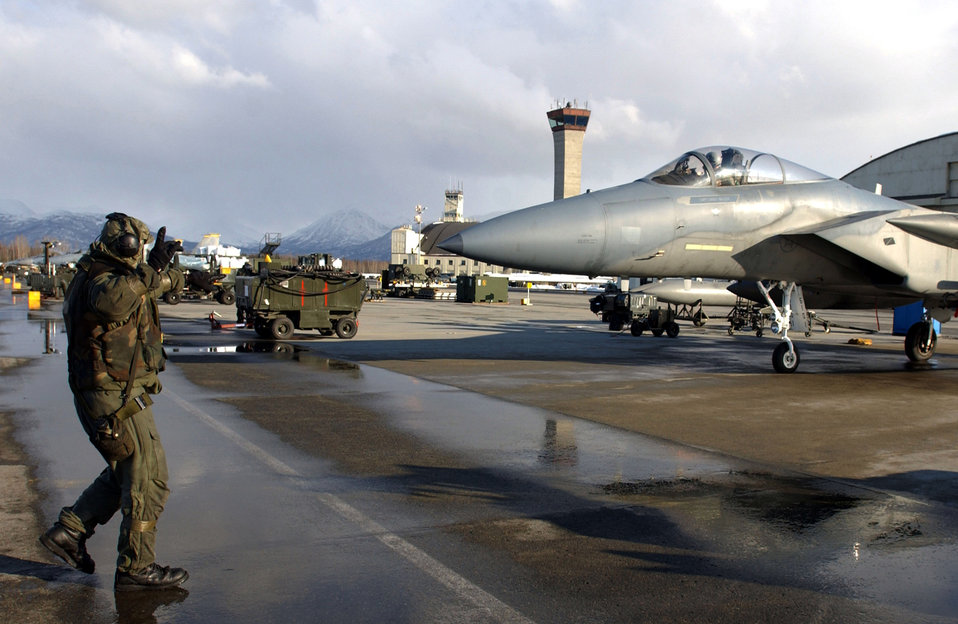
Polar marshal

ELMENDORF AIR FORCE BASE, Alaska -- Staff Sgt. Lee Zelinka prepares to marshal an F-15 Eagle on March 15 during exercise Polar Force 04-4. Sergeant Zelinka is a crew chief with the 12th Aircraft Maintenance Unit, and the F-15 is assigned to the 12th Fighter Squadron.